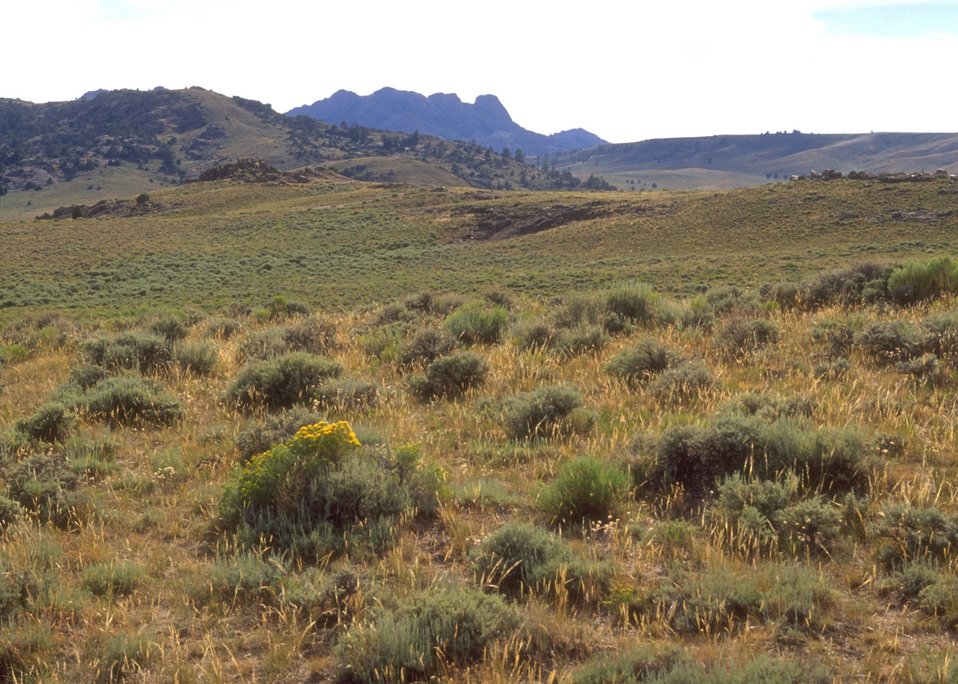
Landscape along the Alcova/Seminoe Back Country Byway, Rawlins Field Office.